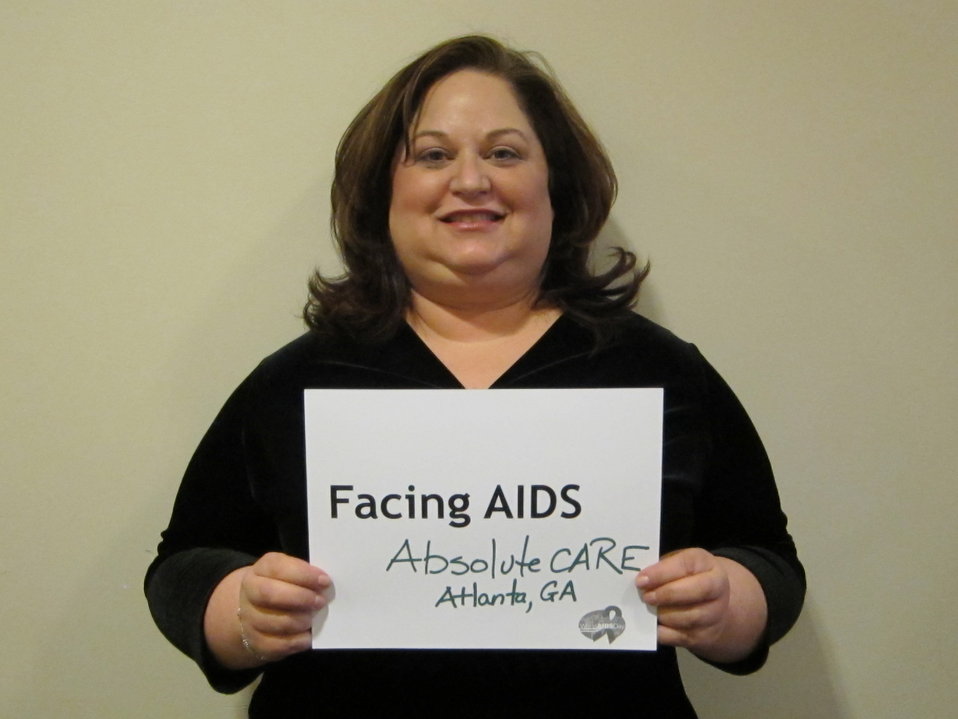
Facing AIDS Absolute Care - Atlanta, Georgia